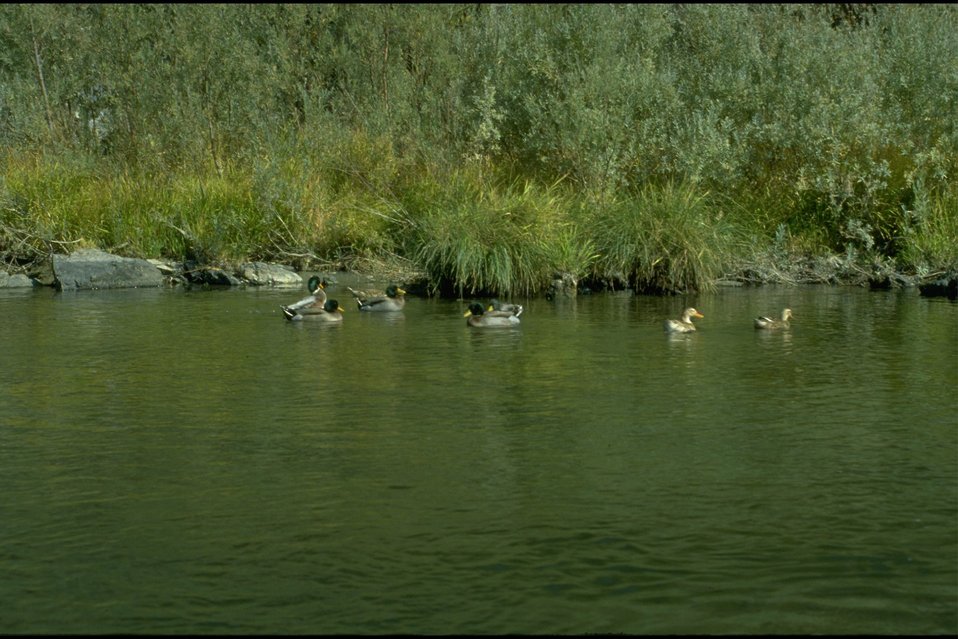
Rogue River - Mallards.